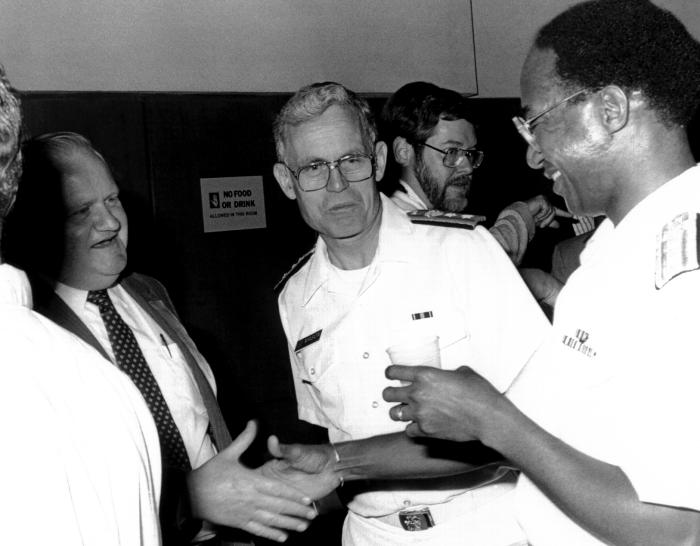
This photograph shows Jim Hicks, Dr. James O. Mason, and Dr. Donald R. Hopkins during a CDC event.